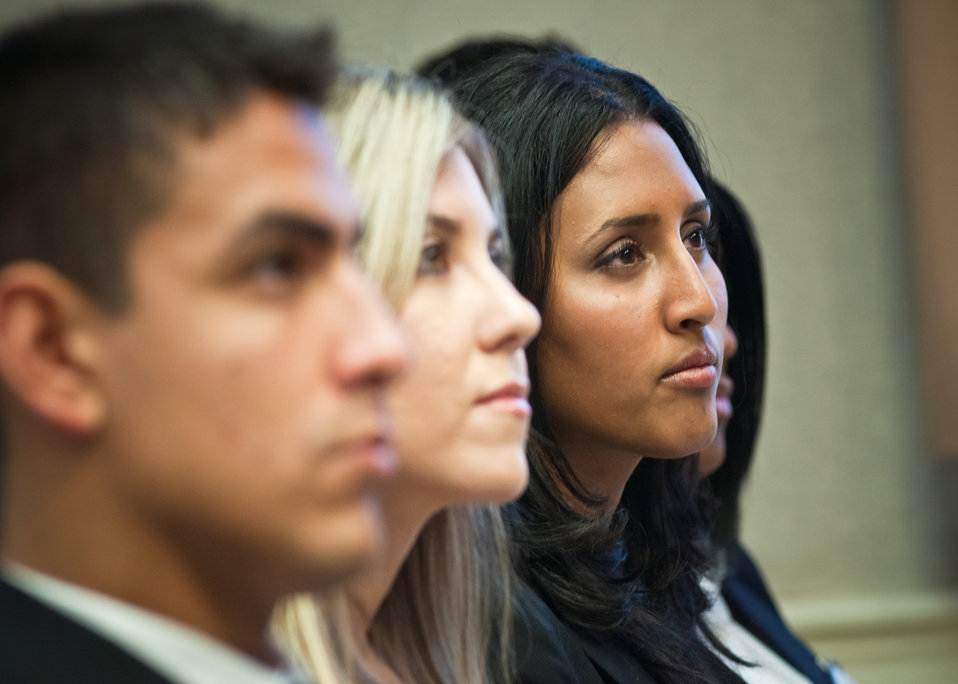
(L to R) Communications majors from Kennesaw State University, Georgia student Freddy Marquez-Moreno, University of Texas, El Paso student Tanya Flores, and Barry University and Miami Shores, Florida student Ileana Alamo listen to speakers at the United States Department of Agriculture (USDA) Summer Hispanic Association of Colleges and University (HACU) and Tribal College interns during their orientation at USDA in Washington, DC, Monday, Jun. 6, 2011. The HACU/Tribal College National Internship Program represents more than 400 colleges and universities committed to higher education in the U.S., Puerto Rico, Latin America, Spain and Portugal and places student interns each year with federal agencies in Washington, DC or in field offices around the country.